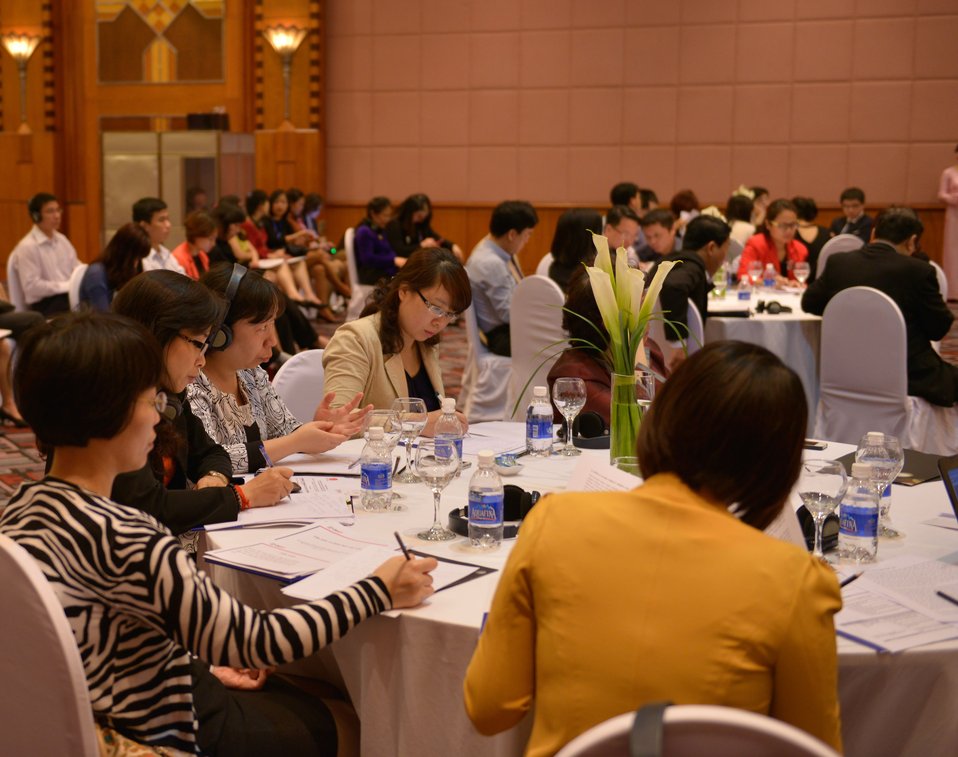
Strategic Kick-off of Governance for Inclusive Growth Program

Hanoi, April 8, 2014.